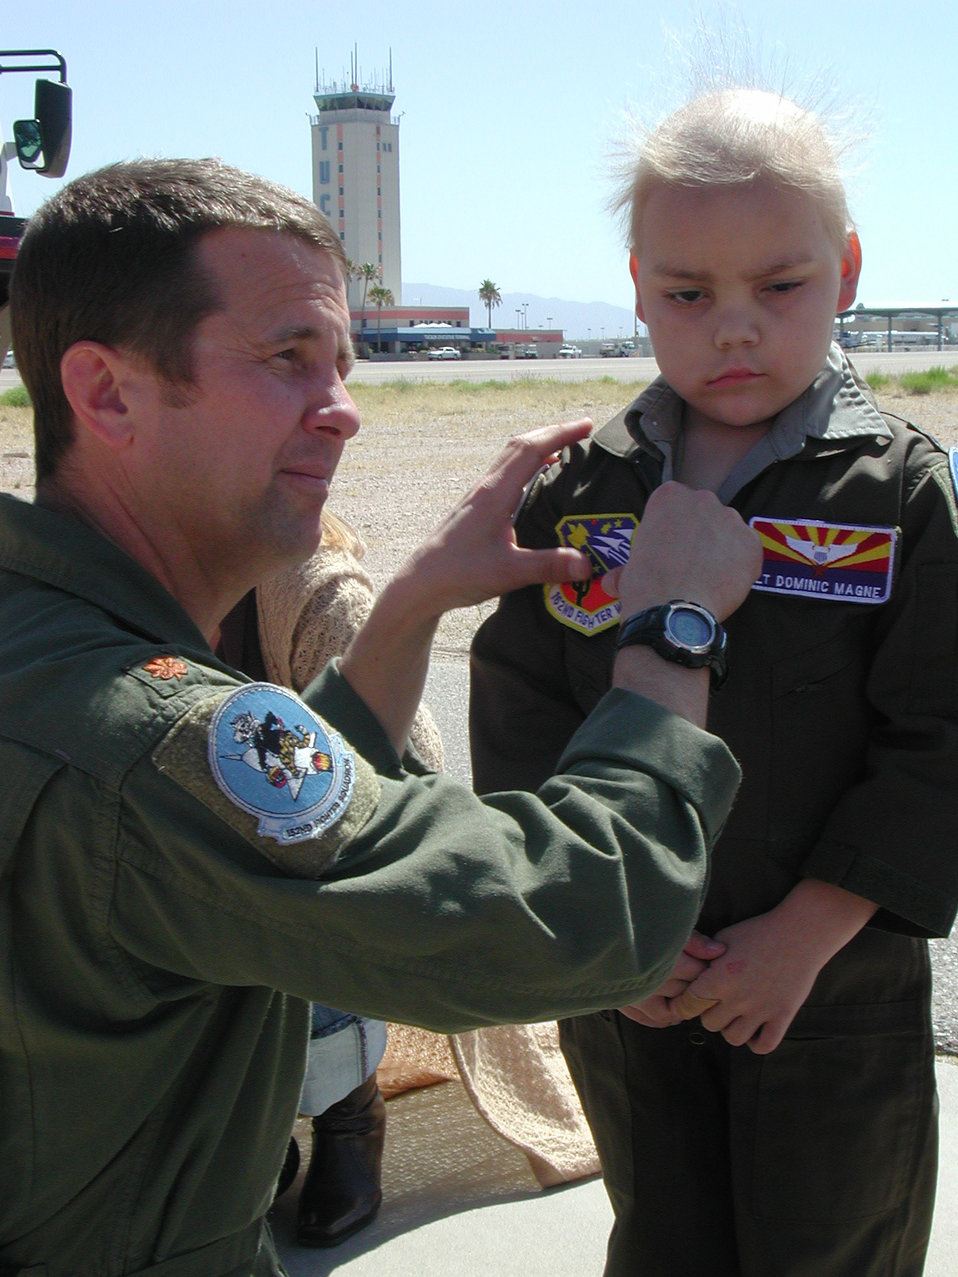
Airman Volunteers as Boy's

Lt. Col. Scott Reinhold, then a major, puts the 162nd Fighter Wing patch on 6-year-old Dominic Magne's flight suit during the boy's visit to the Arizona Air National Guard unit April 17, 2007.